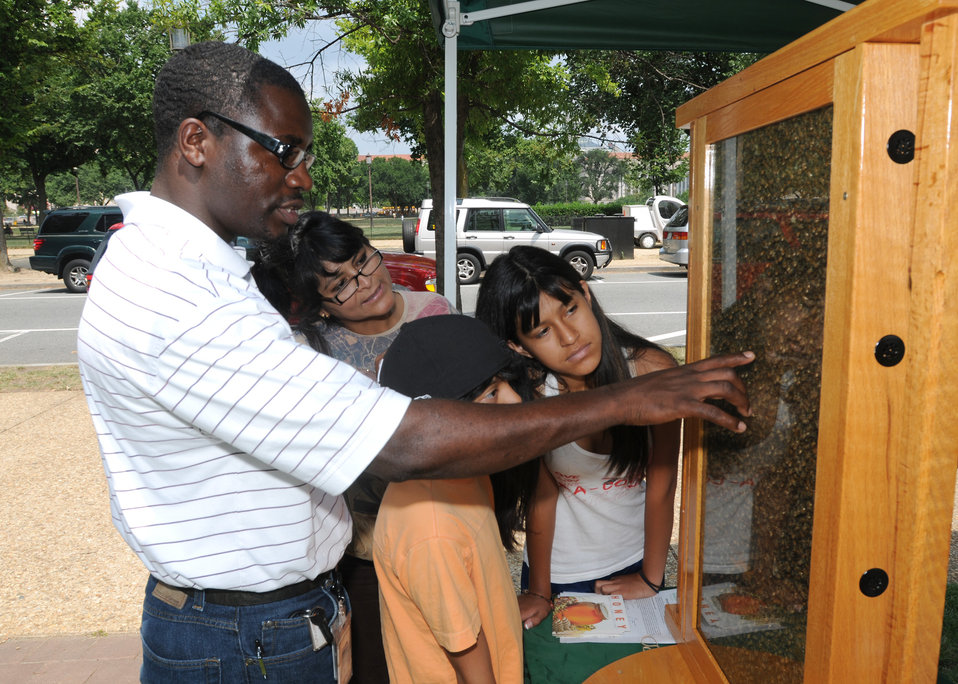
USDA employee volunteers in the People's Garden by discussing pollinators during a Healthy Garden Workshop.